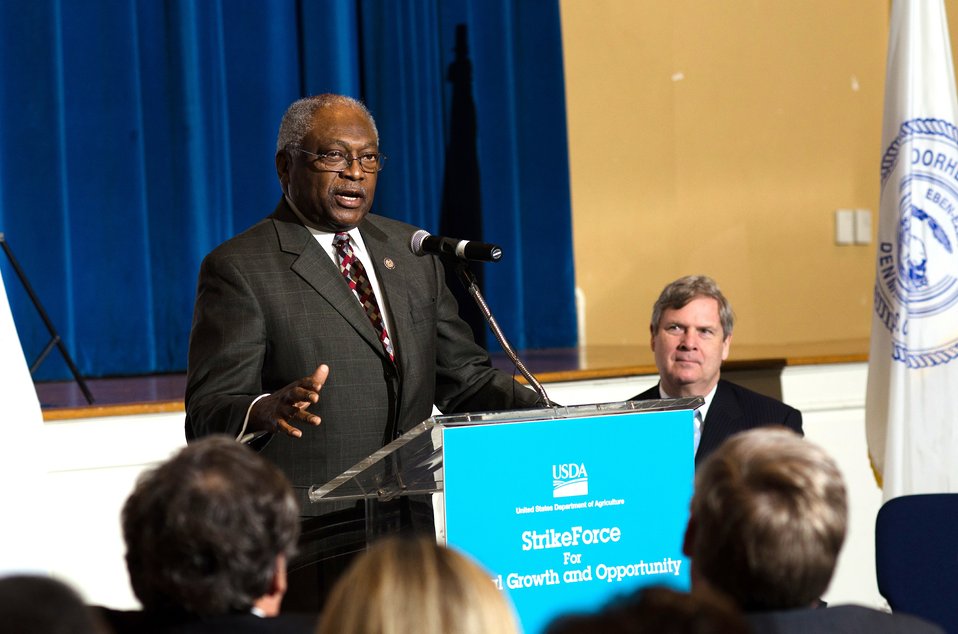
U.S. Congressman Jim Clyburn (SC) introduces Agriculture Secretary Tom Vilsack at the U.S. Department of Agriculture's (USDA) Strike Force for Rural Growth and Opportunity event held at Voorhees College in Denmark, SC, on Tuesday, March 26, 2013.